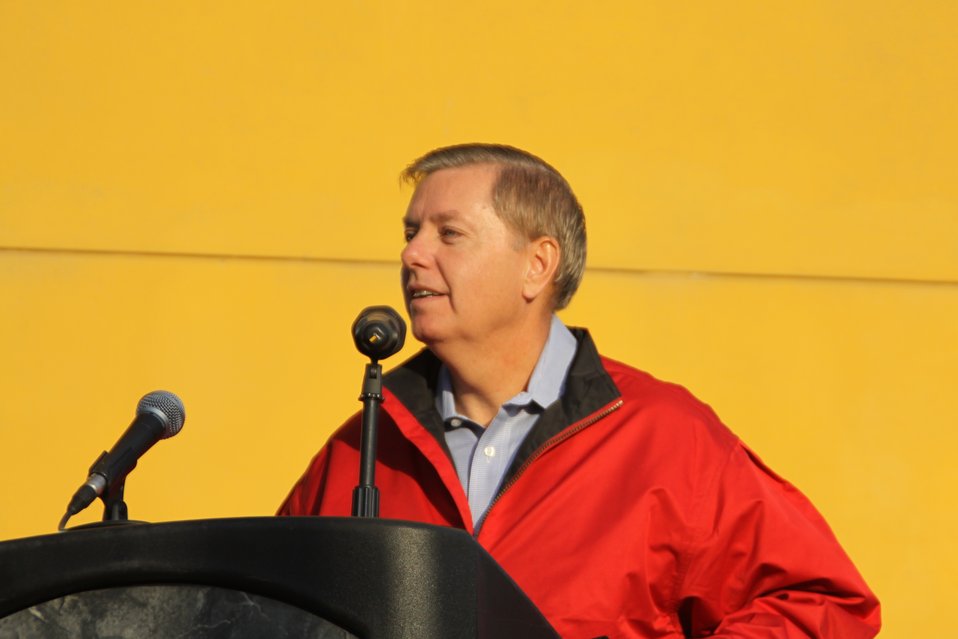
Senator Graham